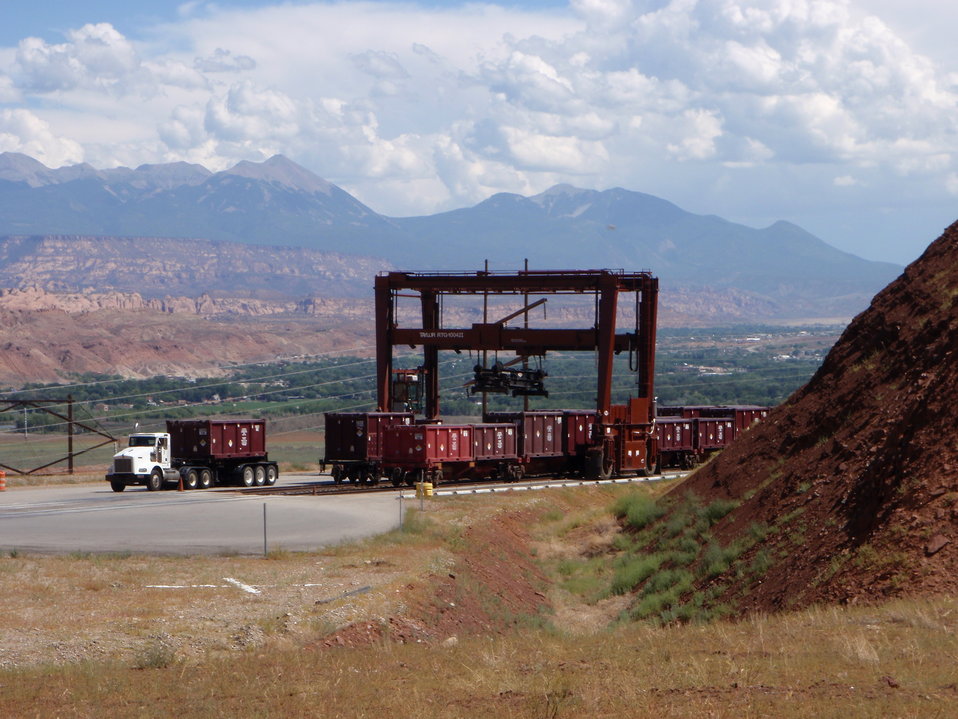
Moab gantry cranes

One of two gantry cranes that load and unload tailings containers from the railcars is pictured on the hillside rail bench west of Moab.